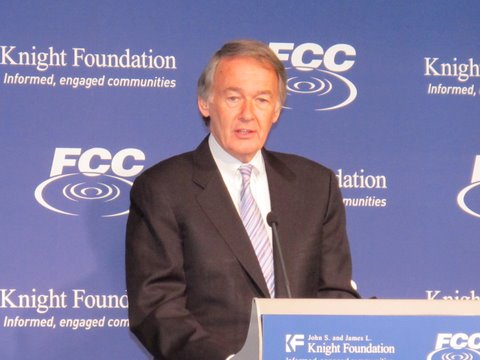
U.S. Rep Edward Markey addresses America's Digital Inclusion Summit at The Newseum, March 9, 2010.